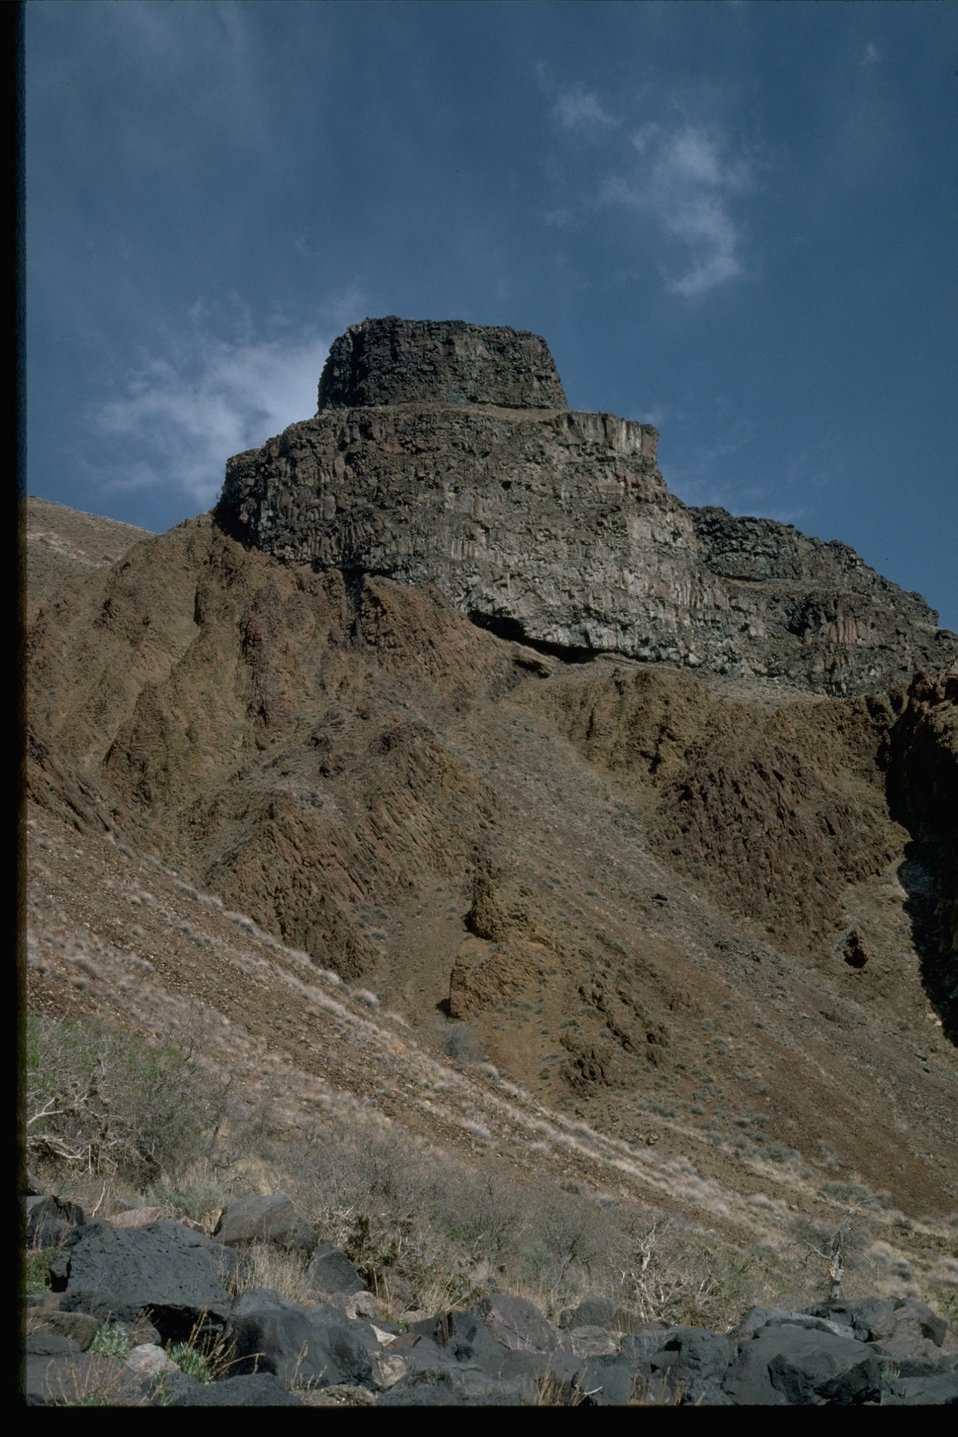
Peak between 4 Mile and Birch Creeks in the Owyhee Breaks Wilderness Study Area. OR 3-59.